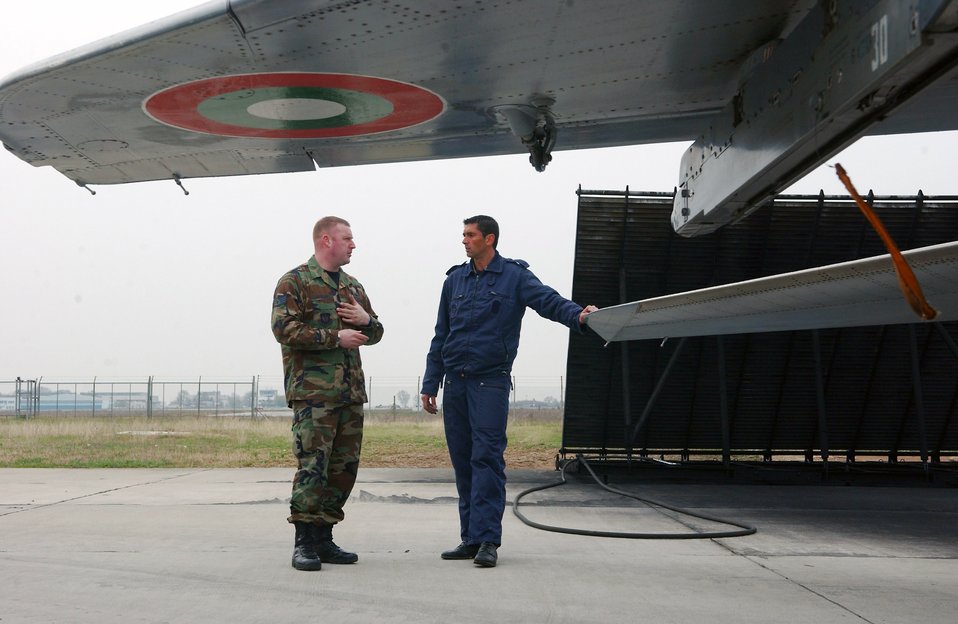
Program benefits American, Bulgarian maintainers

Staff Sgt. Robert Jackson and Bulgarian air force Master Sgt. Vladimir Kolev discuss the differences and similarities in maintainance procedures for their planes April 2 at Graf Ignatievo Air Base, Bulgaria. As part of a familiarization program, a few Airmen from each country's service were allowed to tour and learn about each other's aircraft. Sergeant Jackson is deployed here as part of Operation Noble Endeavor. Sergeant Jackson, an F-15 Eagle crew chief, is deployed for Operation Noble Endeavor. Sergeant Kolev is a MiG-29 crew chief.